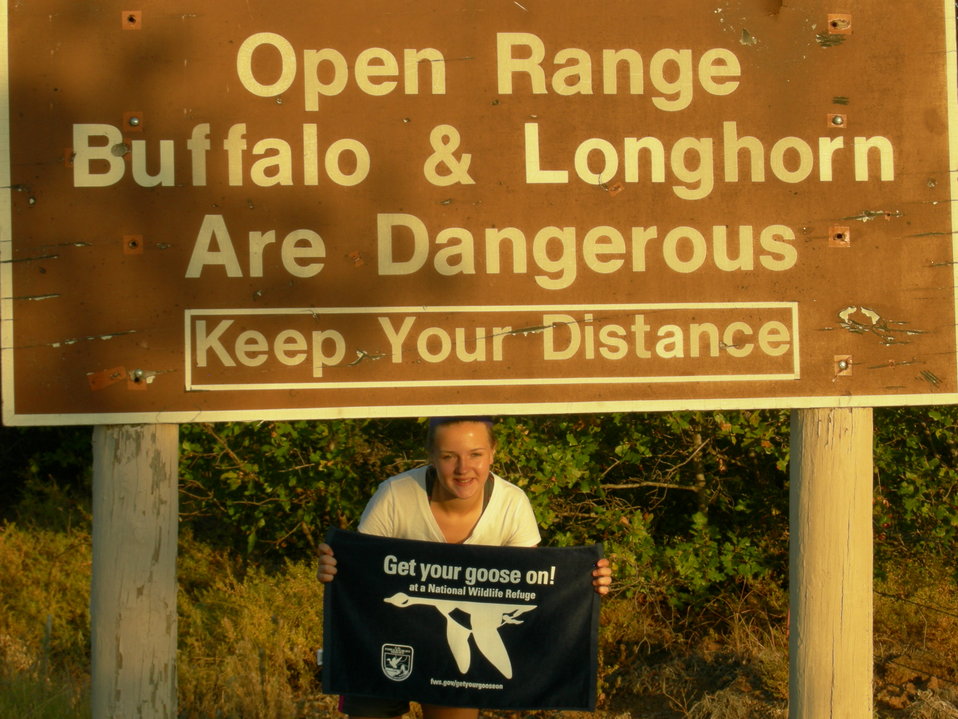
Get Your Goose On!

Wichita Mountains National Wildlife Refuge in Oklahoma.